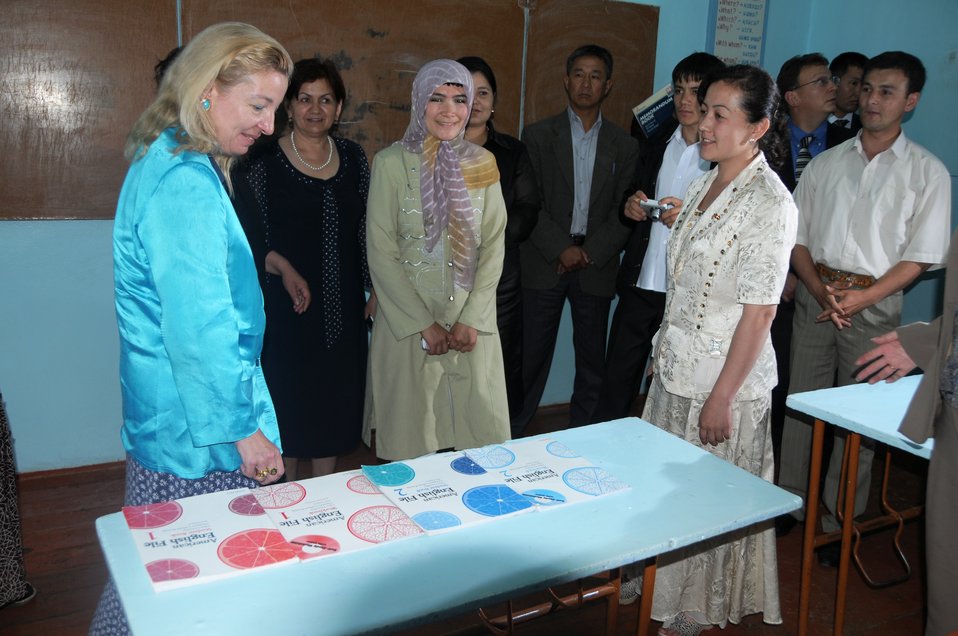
Ambassador Gfoeller Visits an American Pilot School in Kyrgyzstan

U.S. Ambassador to Kyrgyzstan Tatiana C. Gfoeller visits an American Pilot School supported by the U.S. Embassy Bishkek in the village of Shark outside of Osh, Kyrgyzstan, on June 2, 2010.